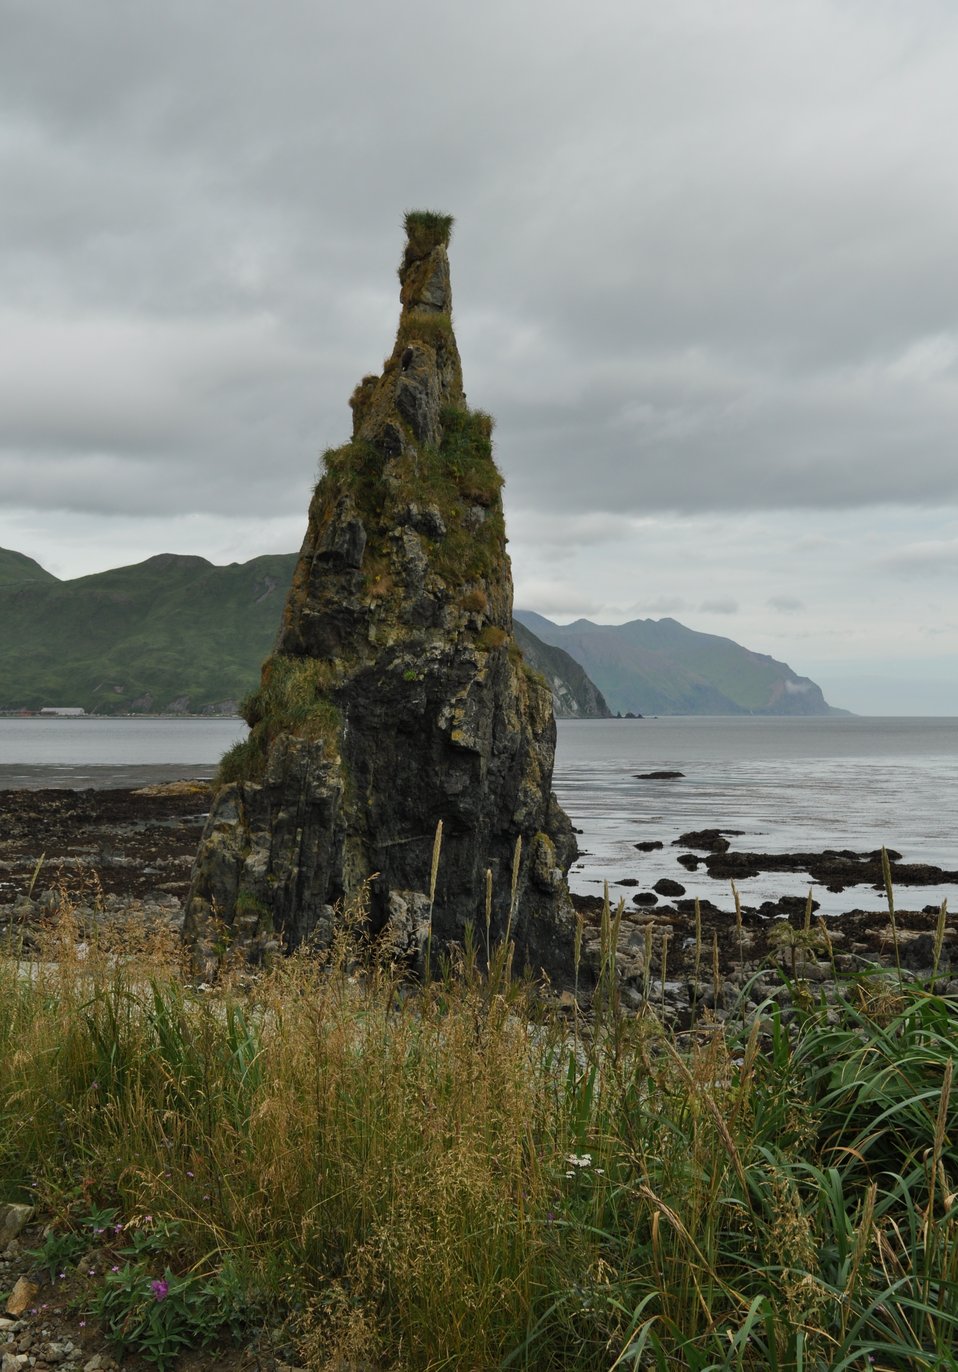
A small rock spire at the edge of the ocean. Perhaps a small pinnacle rock prior to geological uplift.